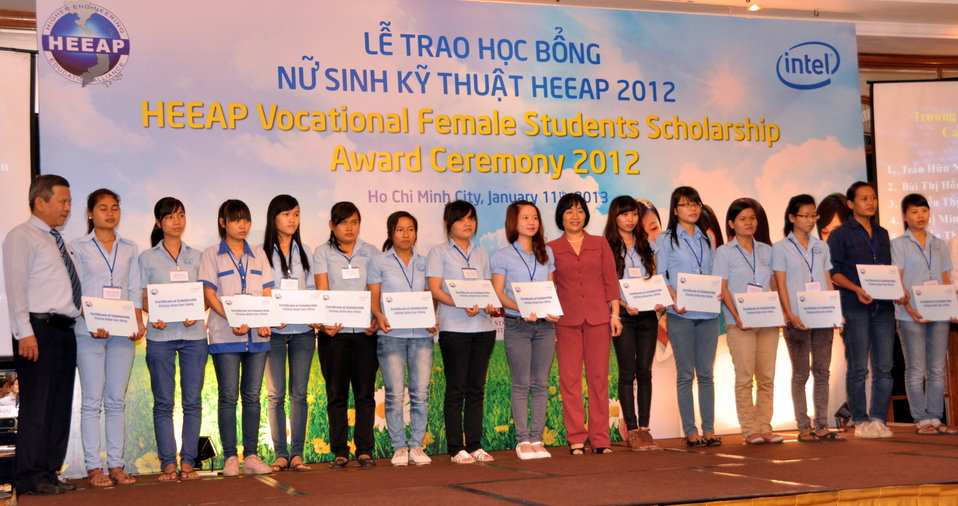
Female Vocational Student Scholarship Recipients

Ho Chi Minh City, January 11, 2013